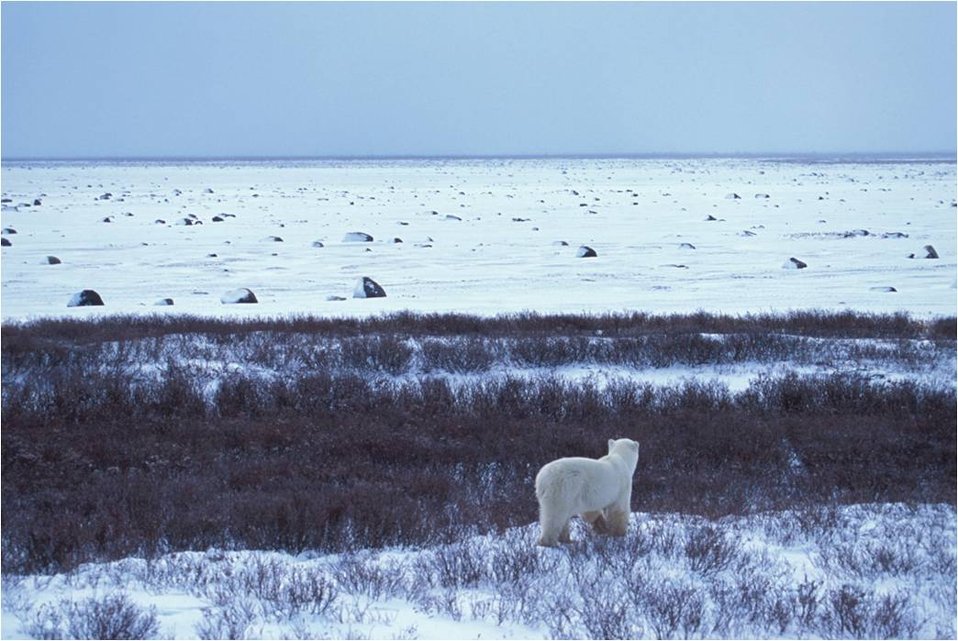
Polar Bear and a Barrier Island on the Alaska Arctic Coast

A polar bear looks out over a barrier island on the Arctic coast of Alaska. These islands are important habitat for the polar bear.